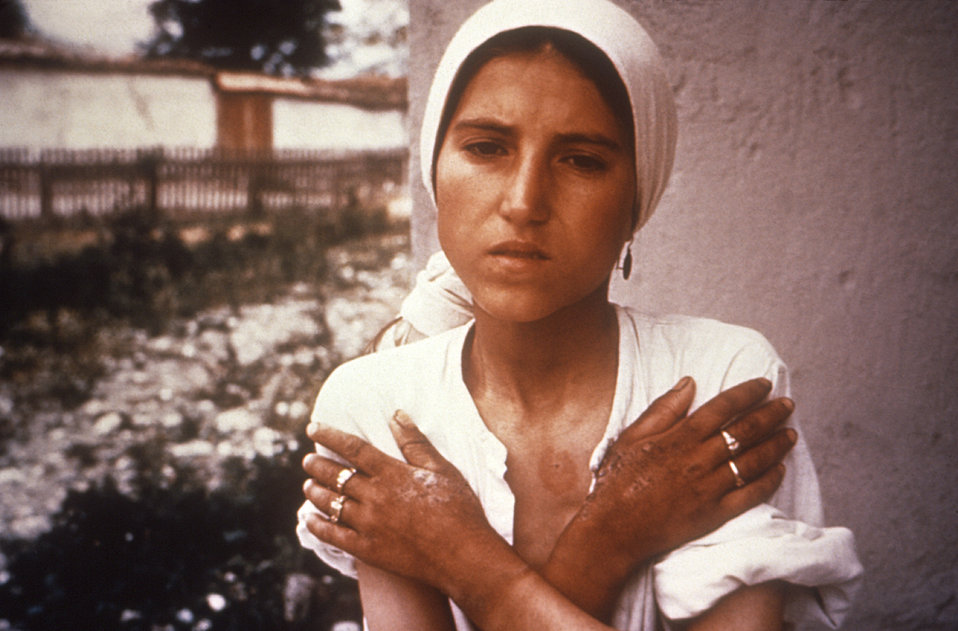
This patient was exhibiting dermatitis of her hands, which is a symptom of pellagra due to a niacin deficiency.